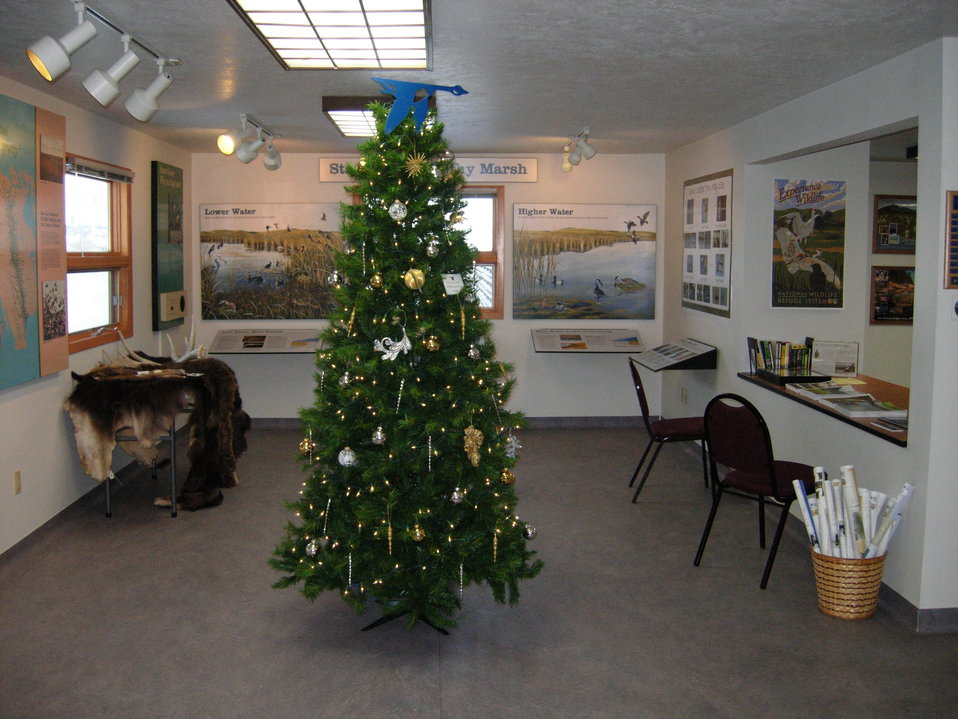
Des Lacs National Wildlife Refuge 'Blue Goose' Tree

Maintenance worker, Dave Gins constructed the blue goose tree topper - how unique!